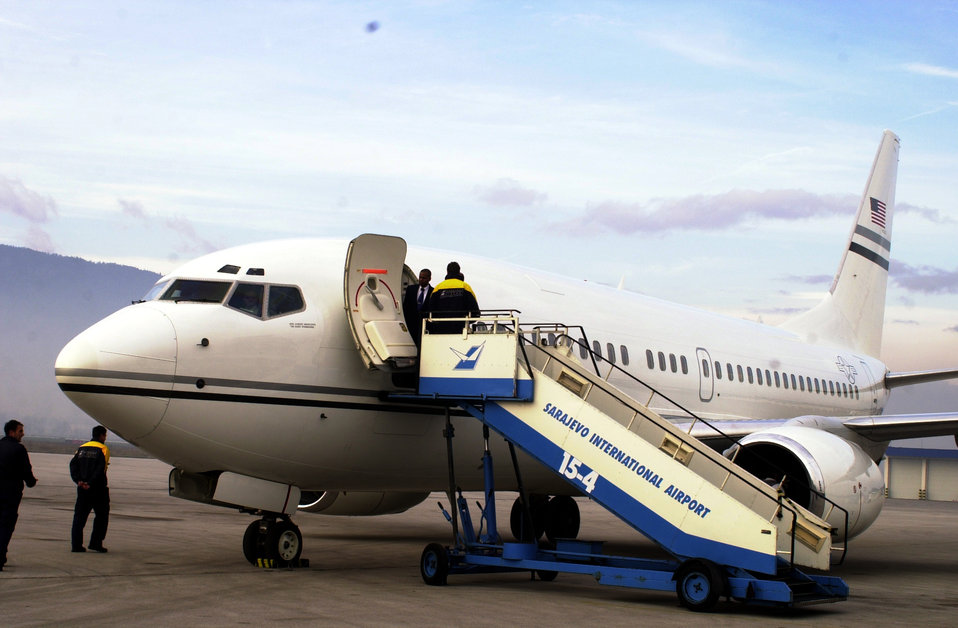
D.C. Guardsmen receive 737s

SARAJEVO, Bosnia and Herzegovina -- Sarajevo was a recent stop for one of the District of Columbia Air National Guard's new Boeing 737 airplanes, also known as the C-40. The district's 201st Airlift Squadron is responsible for flying members of Congress and other dignitaries on government business overseas.